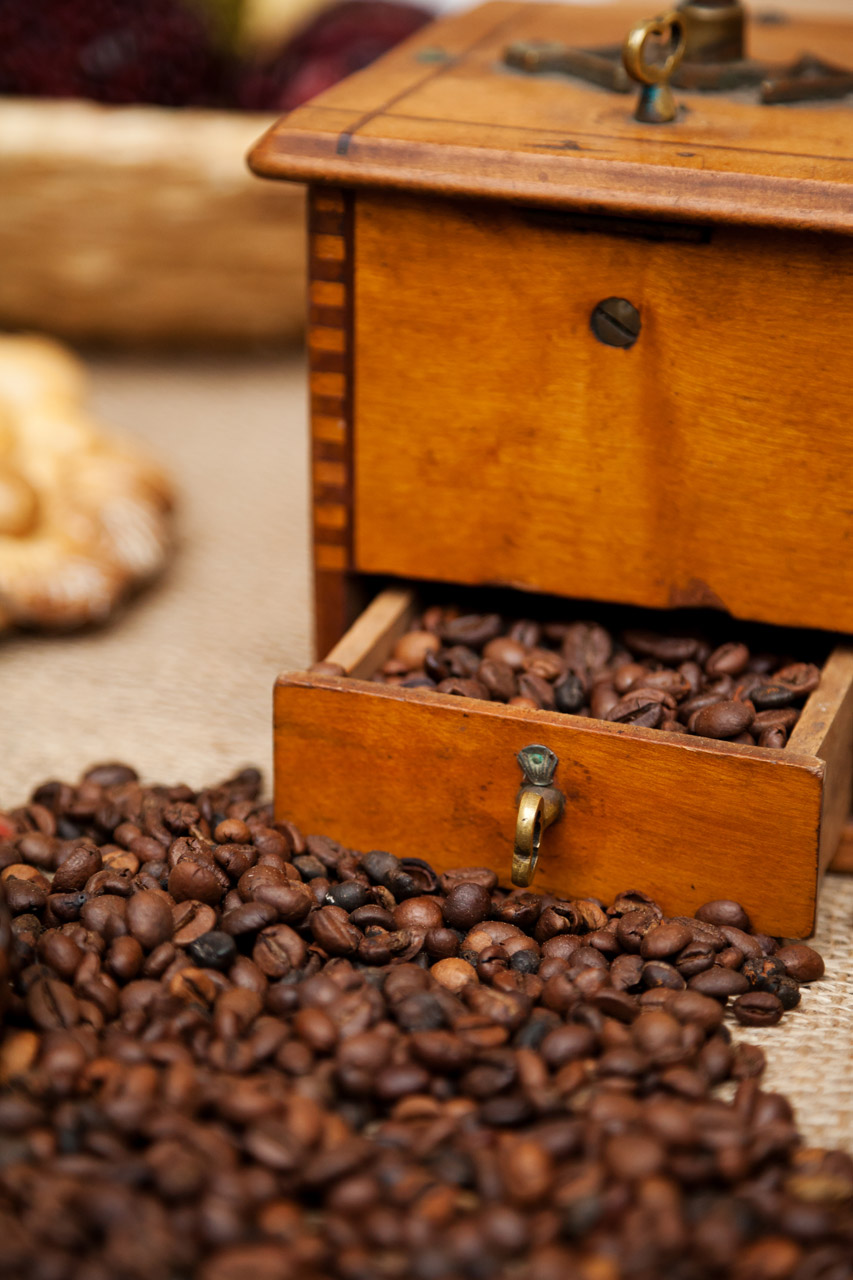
Coffee grinder

Traditional manual coffee grinder.